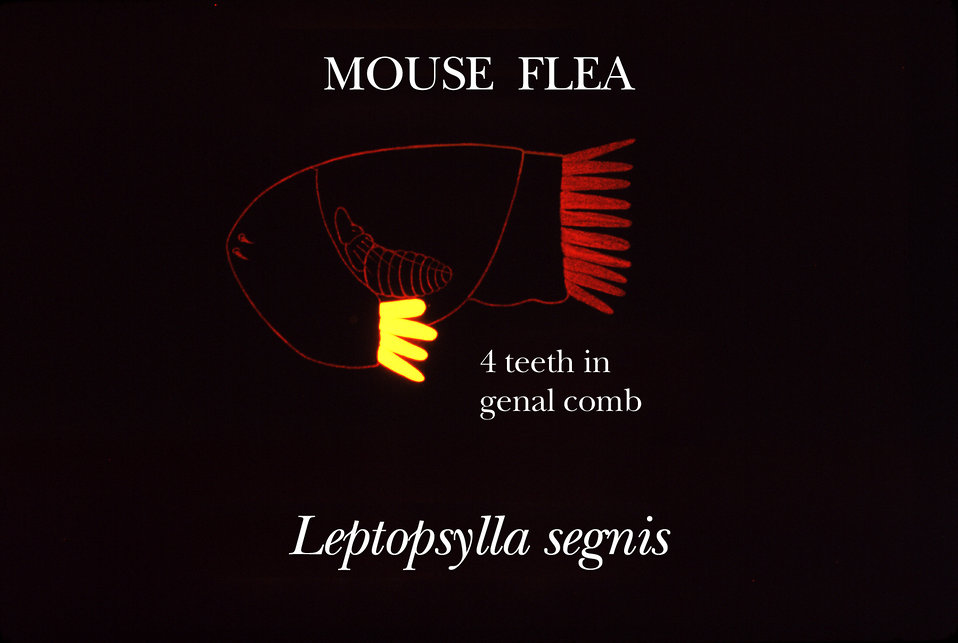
This illustration shows one of the identifying morphologic characteristics of the 'mouse flea', Leptopsylla segnia.